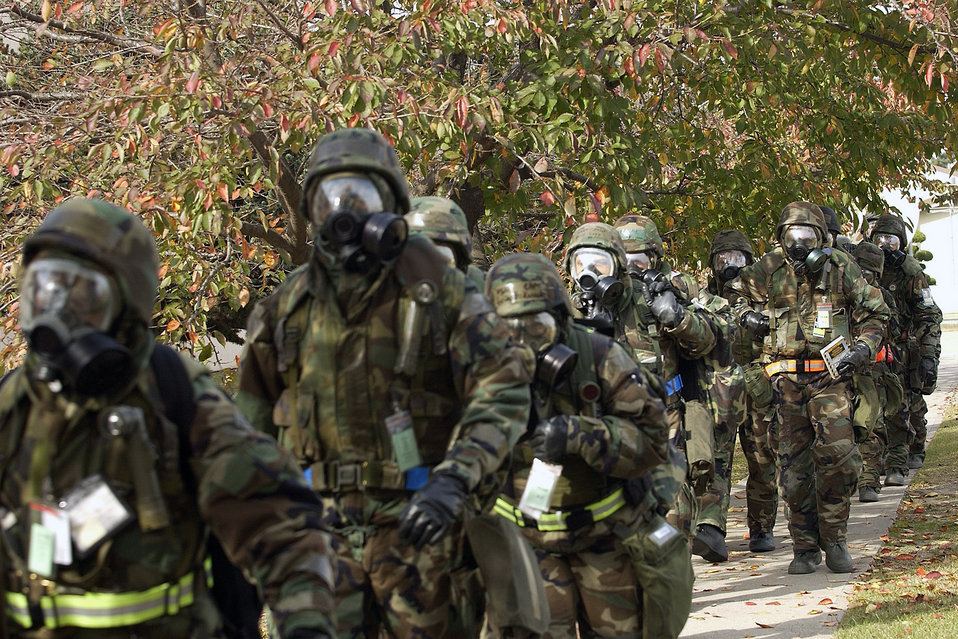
Testing readiness at Kunsan

Members of the 8th Fighter Wing staff leave their designated area for a more secure location during the Peninsula Operational Readiness Exercise Nov. 6 at Kunsan Air Base, South Korea. The exercise tests the wing's ability to train and work in real-world situations.